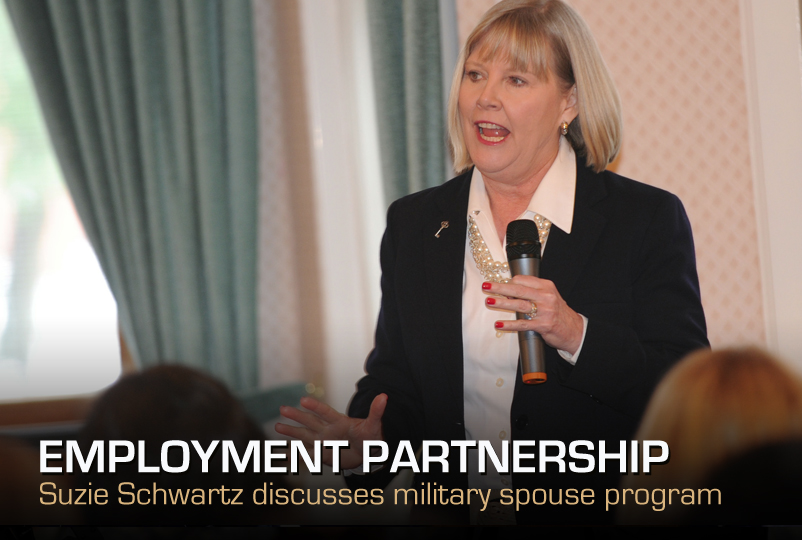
Employment Partnership